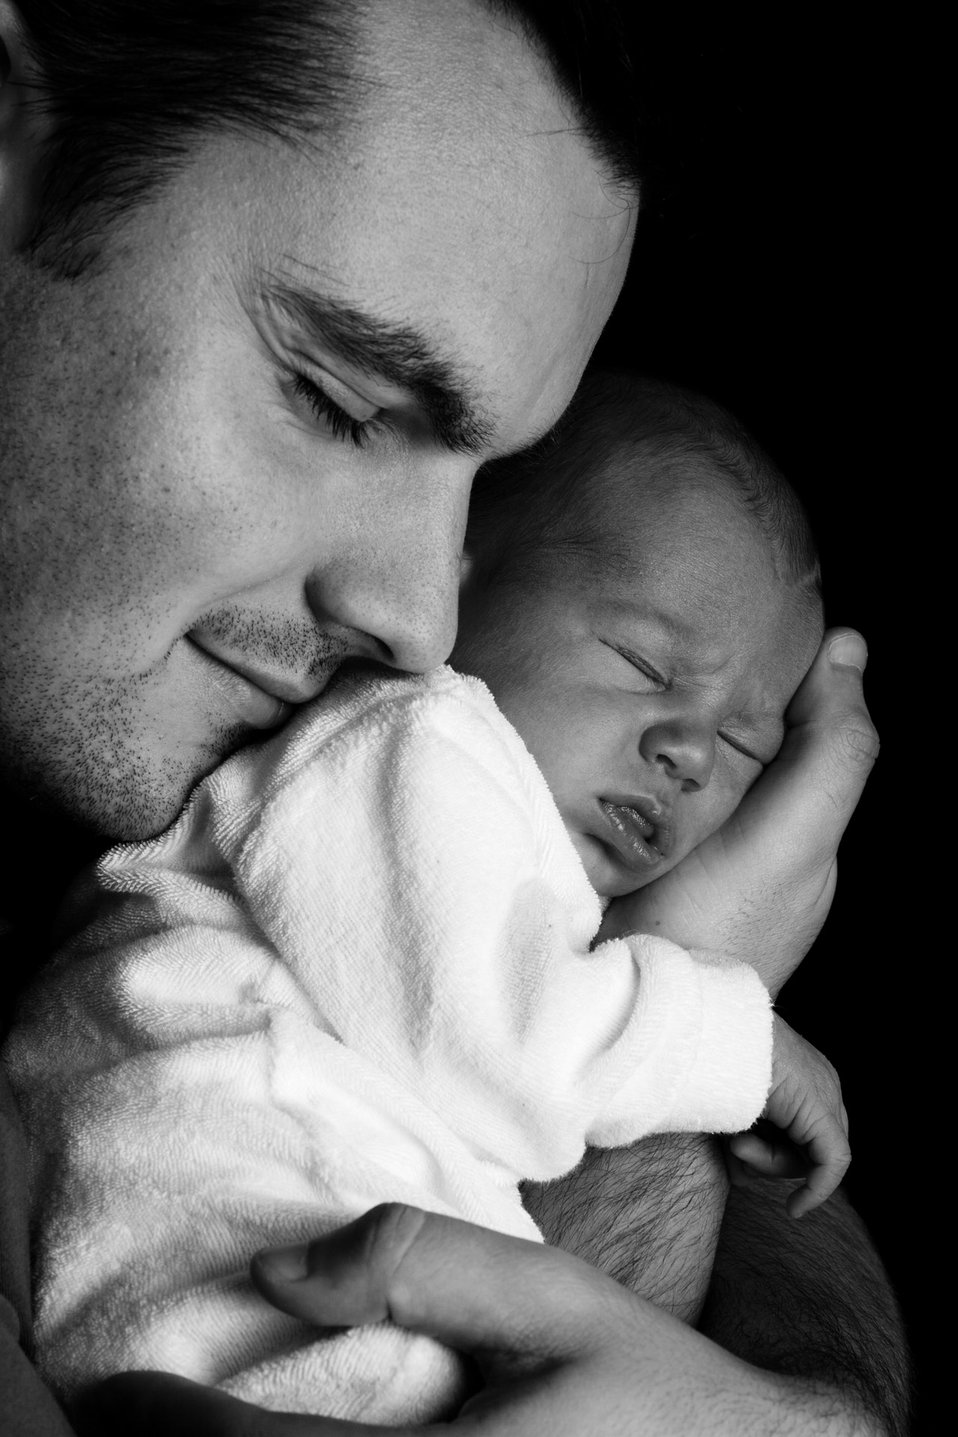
First cuddle

Baby and dad's first cuddle.